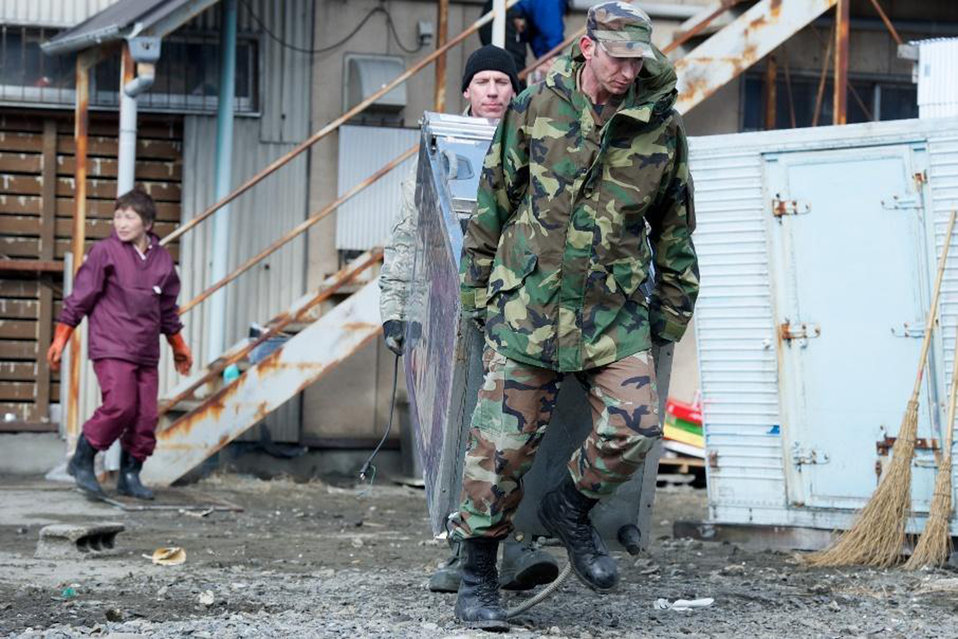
Misawa Air Base Personnel and Family Members help Tsunami-Battered Japanese City

U.S. Air Force Chief Master Sgt. David Varoskovic from Taylor Mich., assigned to 35th Fighter Wing, and Technical Sgt. Dustin Ogburn from Selah, Wash., assigned to 35th Figter Wing Operations Support Squadron, help remove damaged equipment during a local cleanup effort at a Hachinohe warehouse. More than 50 volunteers from Misawa Air Base assisted with the cleanup here following the 9.0-magnitude earthquake that triggered a devastating tsunami on Japan's eastern coastline.